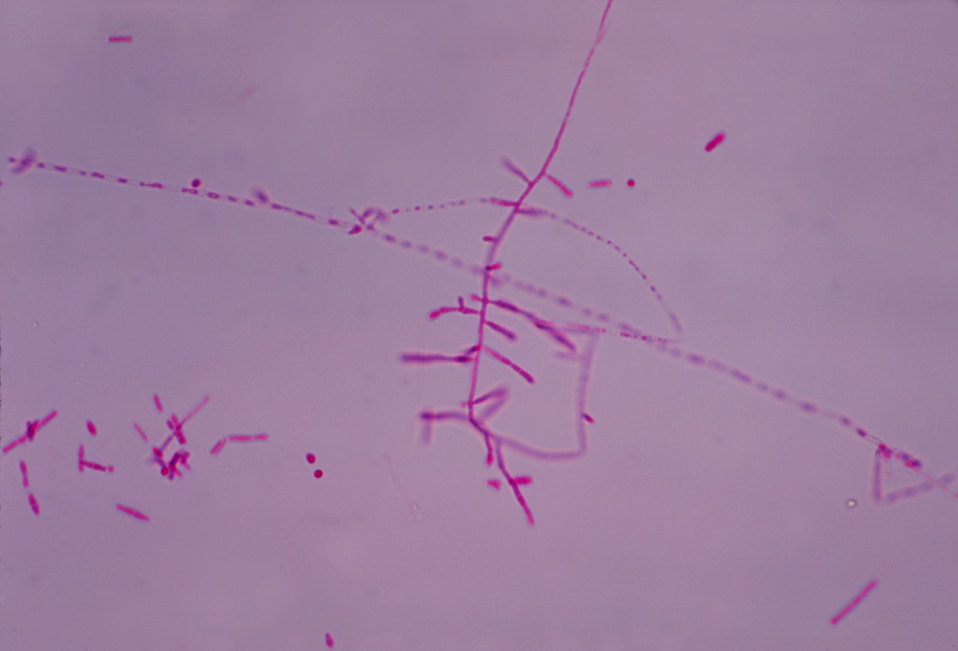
This is a photomicrograph of Trichophyton mariatii during a hair perforation test.